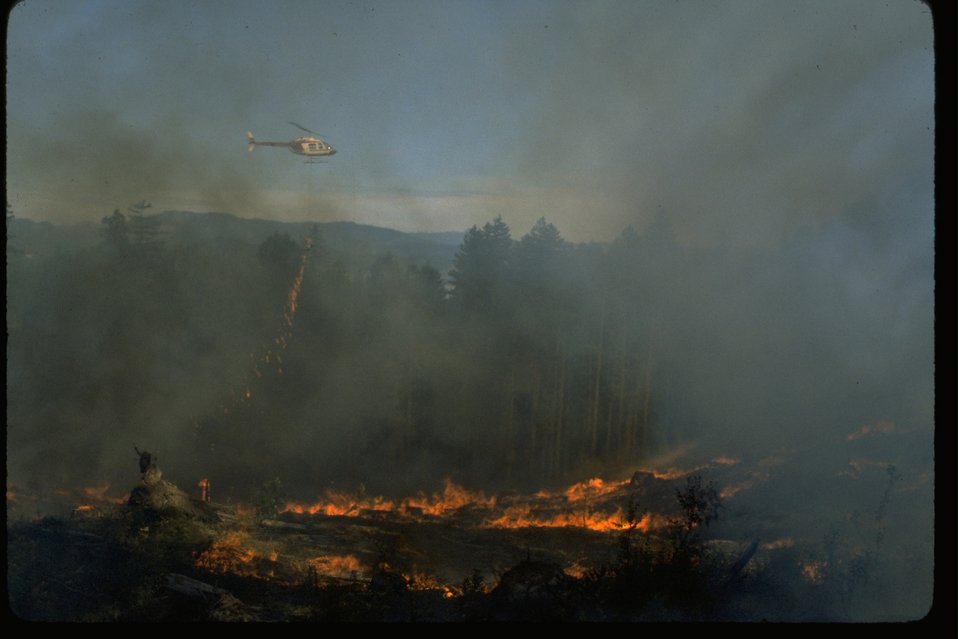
Helicopter flying over a forest fire.